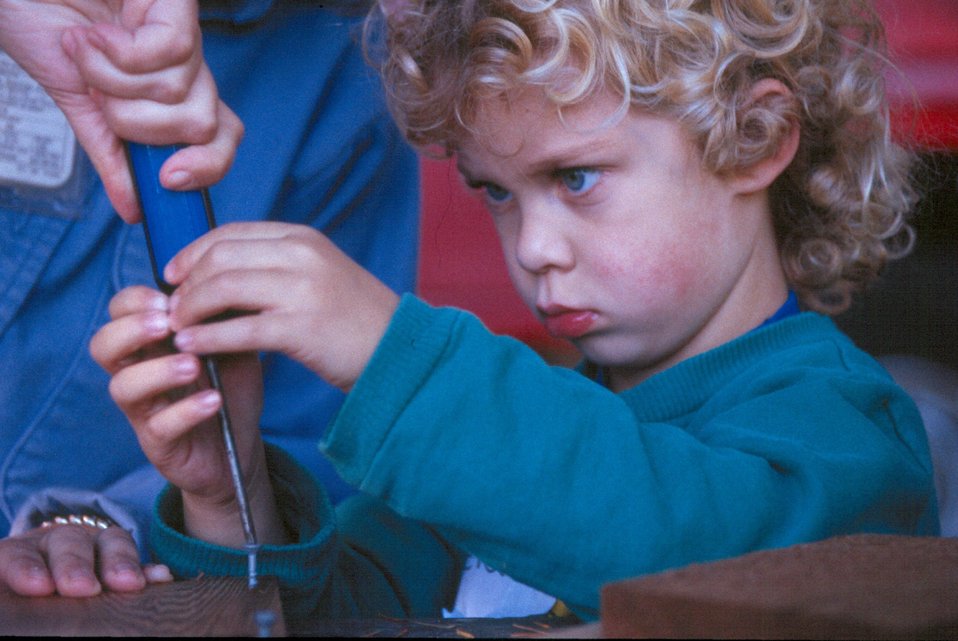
Volunteer Reid Center concentrating on assembling a bird box